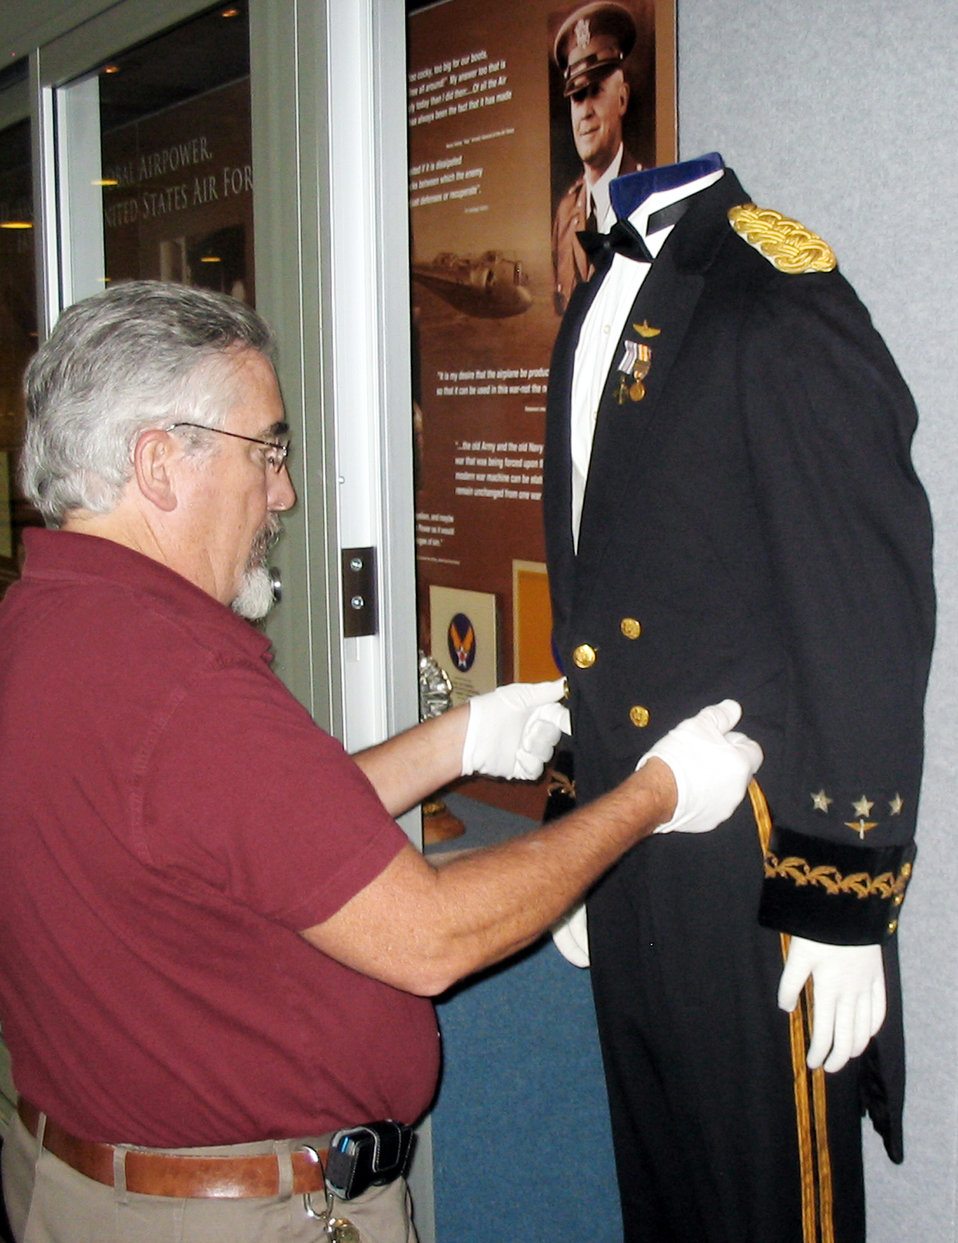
Historical exhibit showcases 'Father of the Air Force'

Paul Martin adjusts the tail coat on General Henry